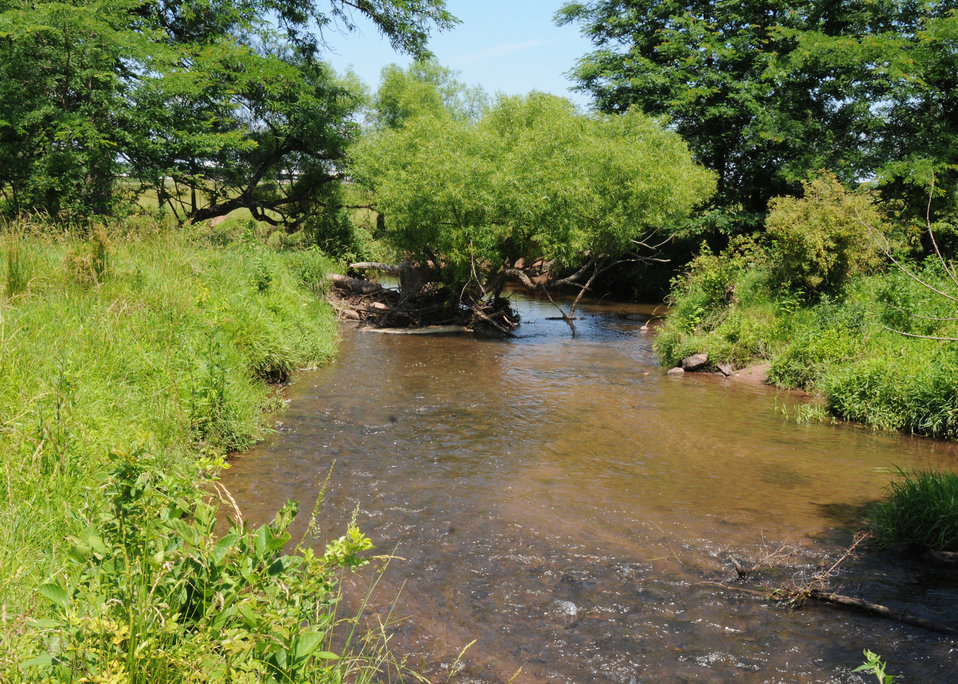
The U. S. Department of Agriculture selected three watershed areas, Conewago Creek in Pennsylvania (pictured), Smith Creek in Virginia, and Upper Chester River in Maryland as part of the Chesapeake Showcase Watershed Project. The watershed project will utilize the collective energies of Federal, State, and local partners to help landowners and communities use their land in sustainable ways that do not harm water quality. If these watersheds are successfully restored they may become models for the six states involved in restoring the Chesapeake Bay. Conewago Creek watershed covers 33,606 acres in Pennsylvania, 44% percent is in Dauphin County, 37% percent in Lebanon County, and 18% in Lancaster County. Majority of watershed is farmland and consists of a variety of crops, pasture, and forest. USDA photo 10di1410-163.